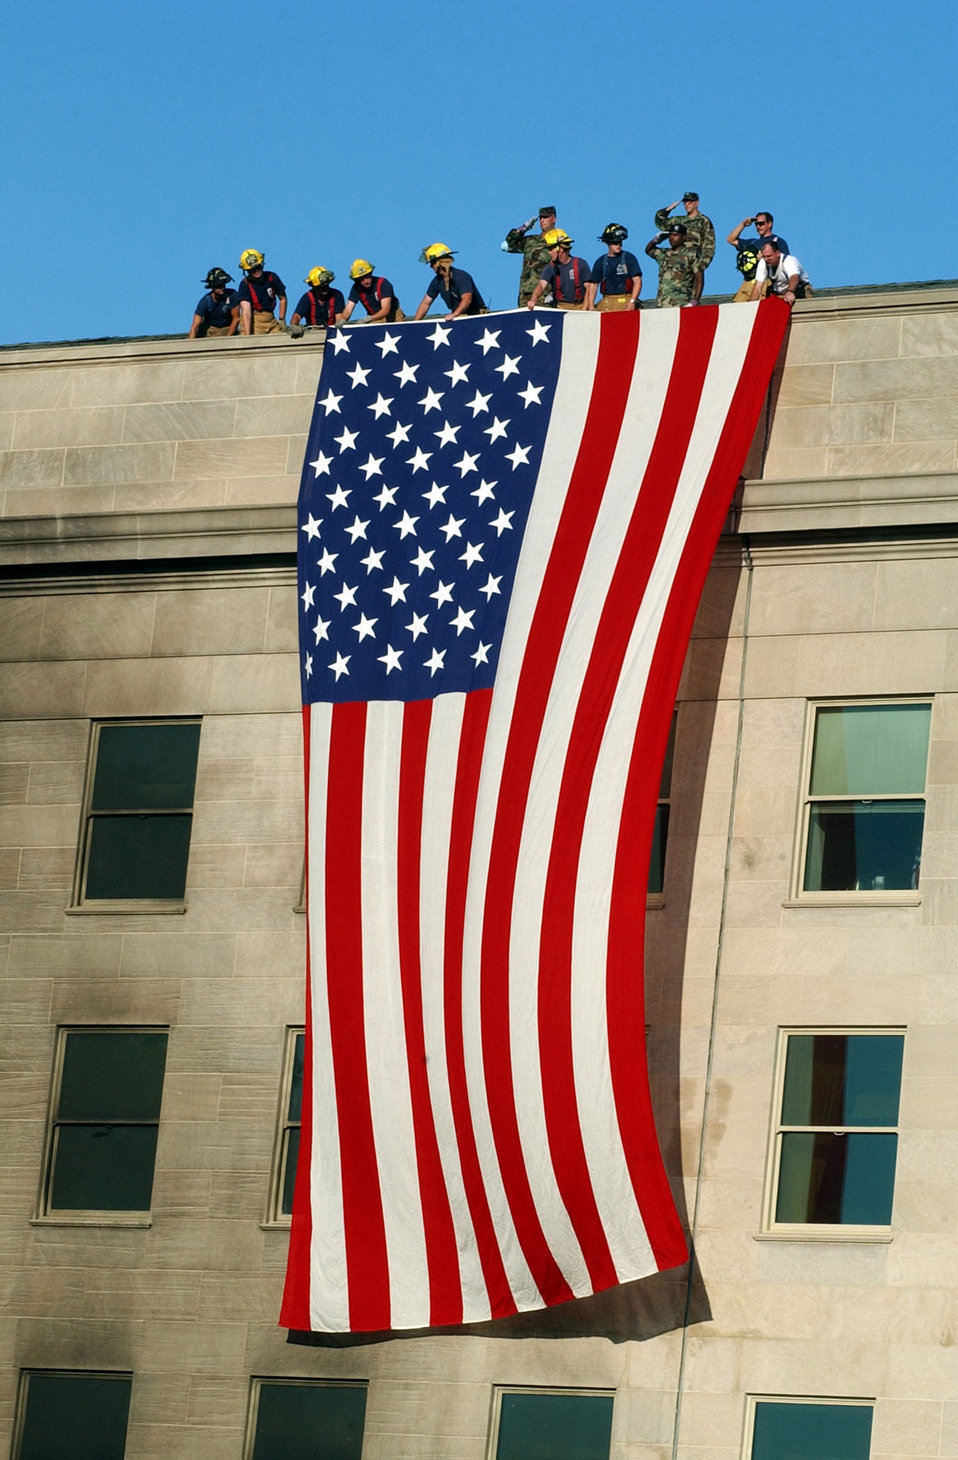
Pentagon flag

WASHINGTON -- Military members rendered honors as fire and rescue workers unfurled a huge American flag over the side of the Pentagon during rescue and recovery work following the Sept. 11 terrorist attack. The attack came at approximately 9:40 a.m. as a hijacked commercial airliner, originating from Washington, D.C.'s Dulles International Airport, was flown into the southern side of the building facing Virginia Highway 27.